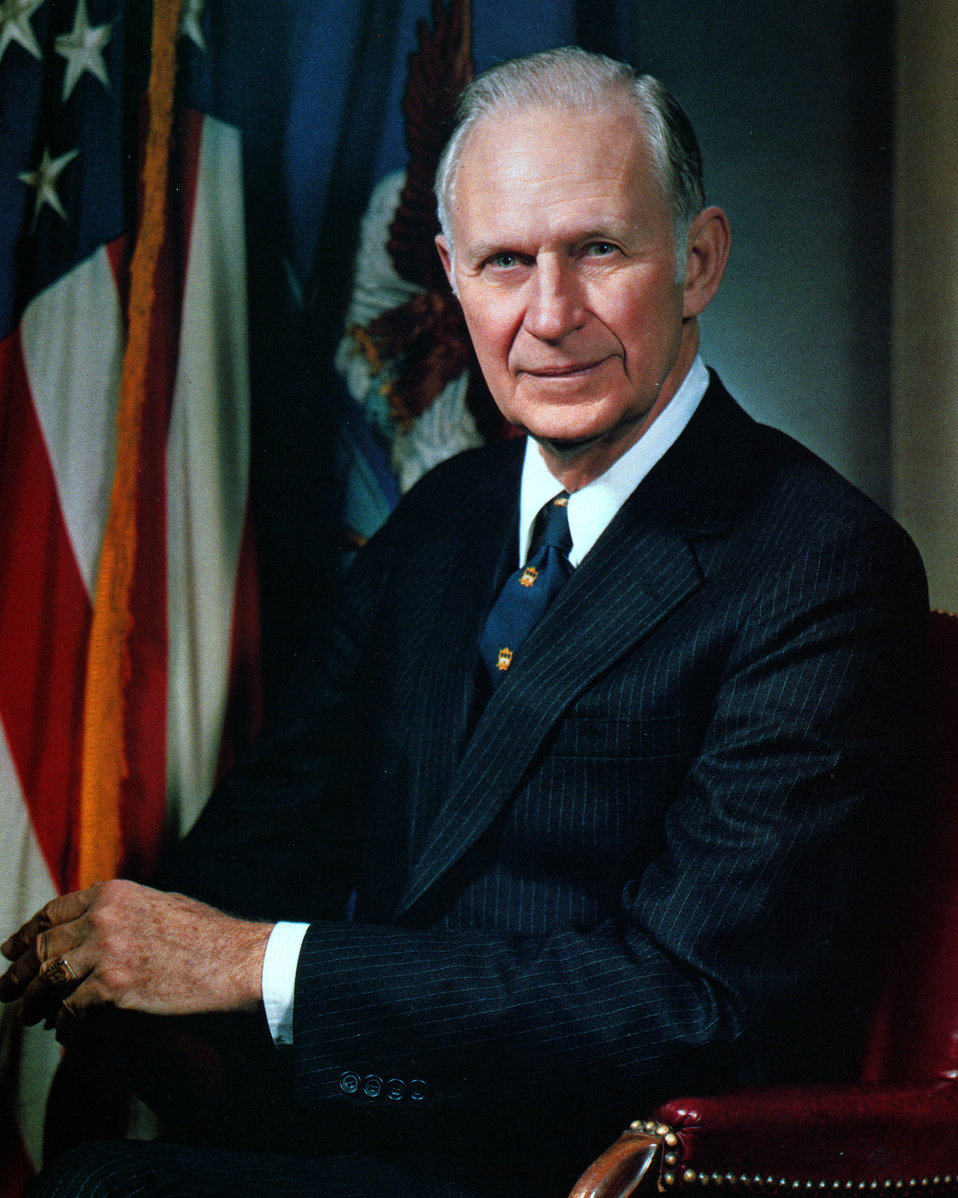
Former Air Force secretary dies at 92

Former Secretary of the Air Force Verne Orr died Nov. 27 at age 92 in his home in Pasadena, Calif. Secretary Verne Orr served under President Ronald Reagan from 1981 to 1985.